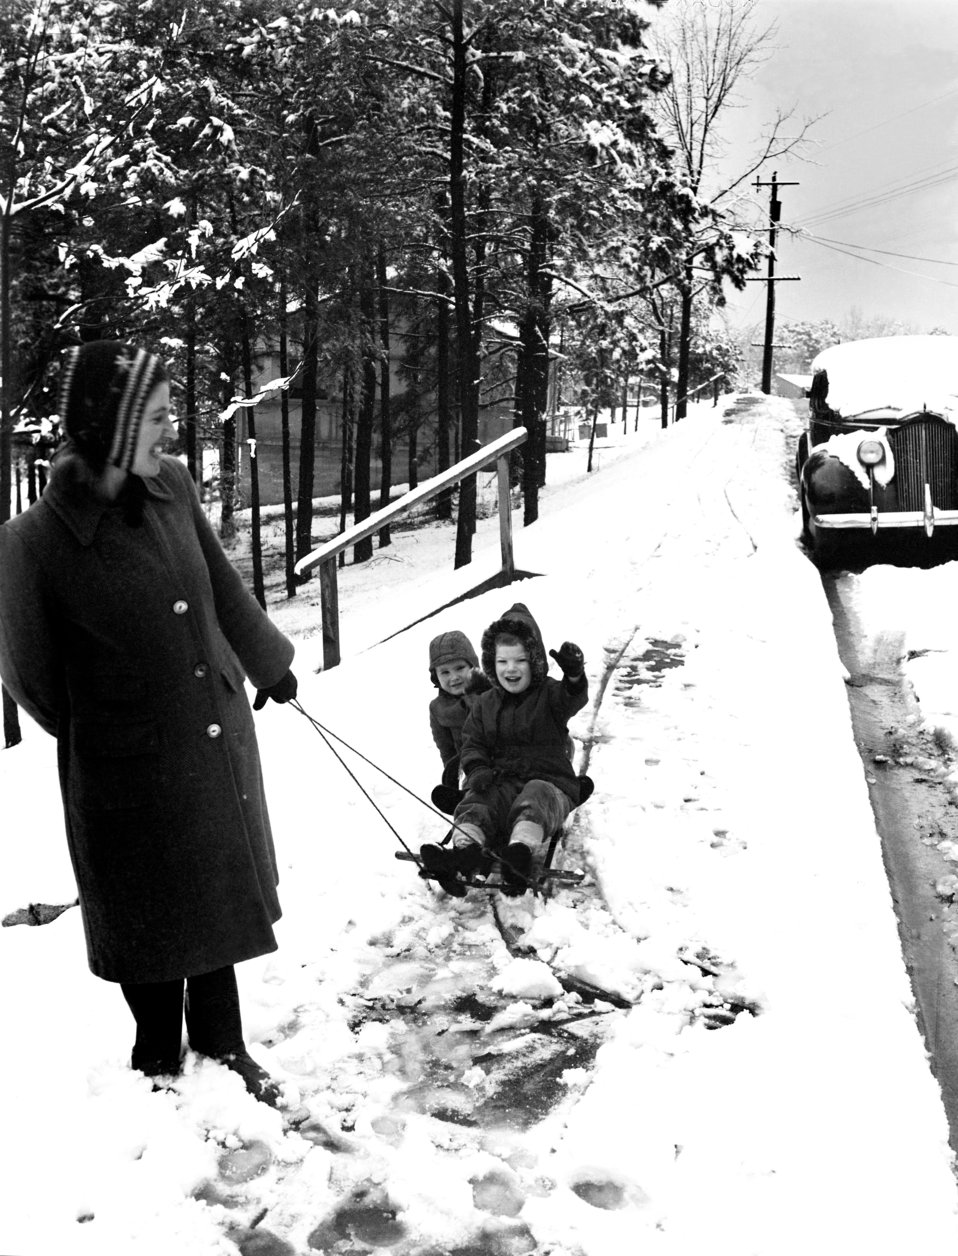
Snow Scenes Oak Ridge 1947

3306-16ww DOE photo Ed Westcott 2-20-1947 Oak Ridge Tennessee